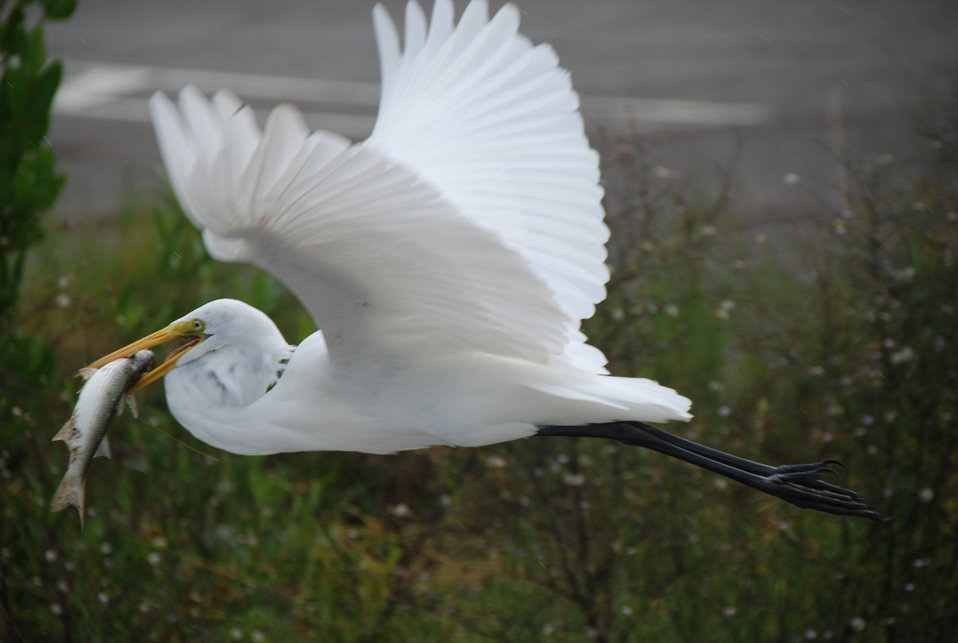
Egret

Merritt Island National Wildlife Refuge.